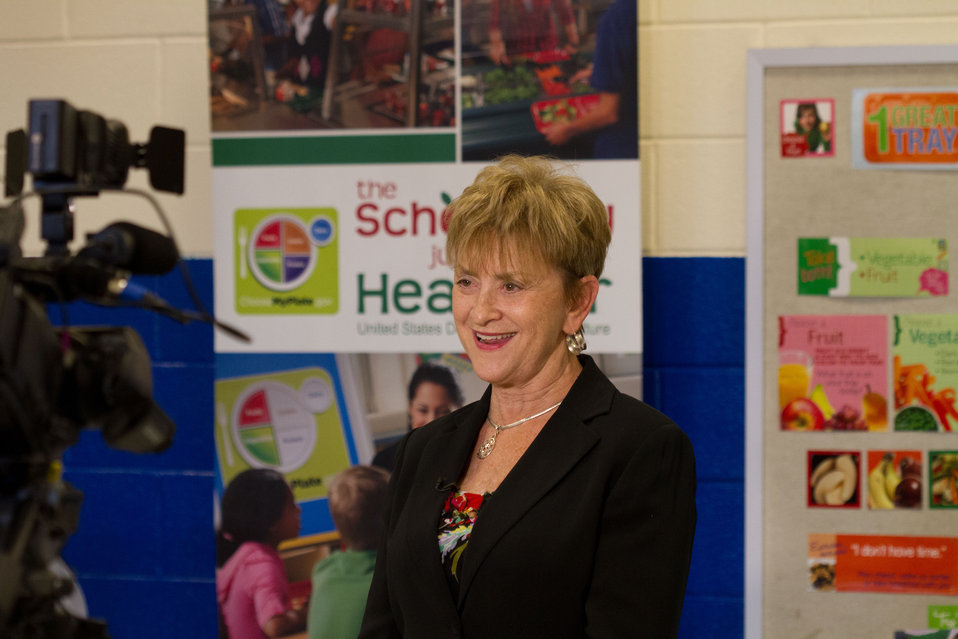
Agriculture's Food and Nutrition Service Deputy Under Secretary Dr. Janey Thornton talks with the news media during her visit with more than 50 students from the 5th grade classes at the Yorkshire Elementary School in Manassas, VA. The students participated in a taste testing of the new school lunch menu created to meet the new standards. Students tested a sample menu of black-bean filled pizza, pineapple spear, plantain, sunny broccoli and cauliflower toss, and an apple and celery cup with sunbutter dip (a peanut butter substitution), on Wednesday, September 5, 2012.